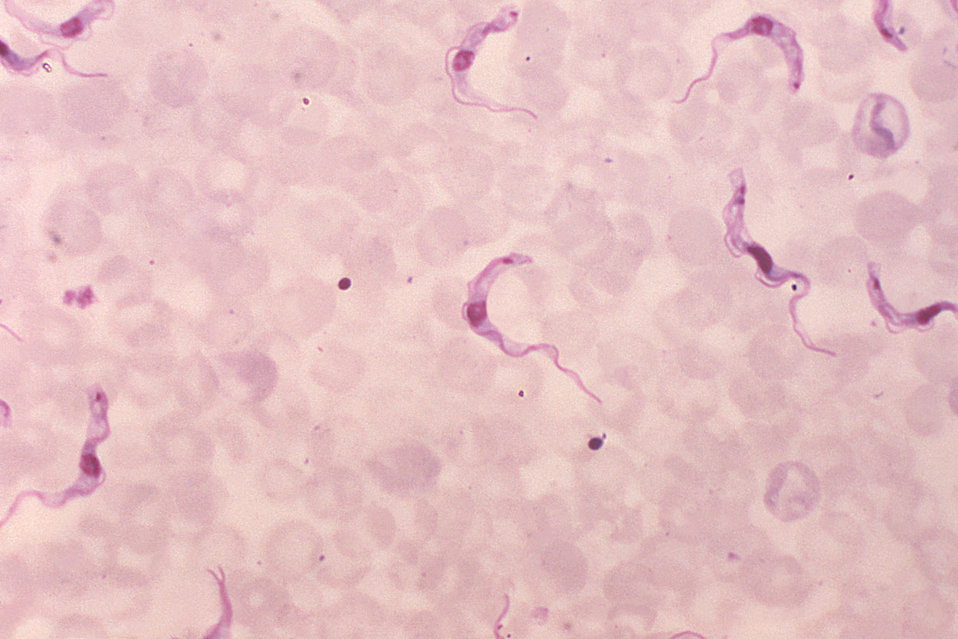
This is a micrograph of a rat blood smear revealing Trypanosoma brucei parasites, using a Giemsa stain technique.